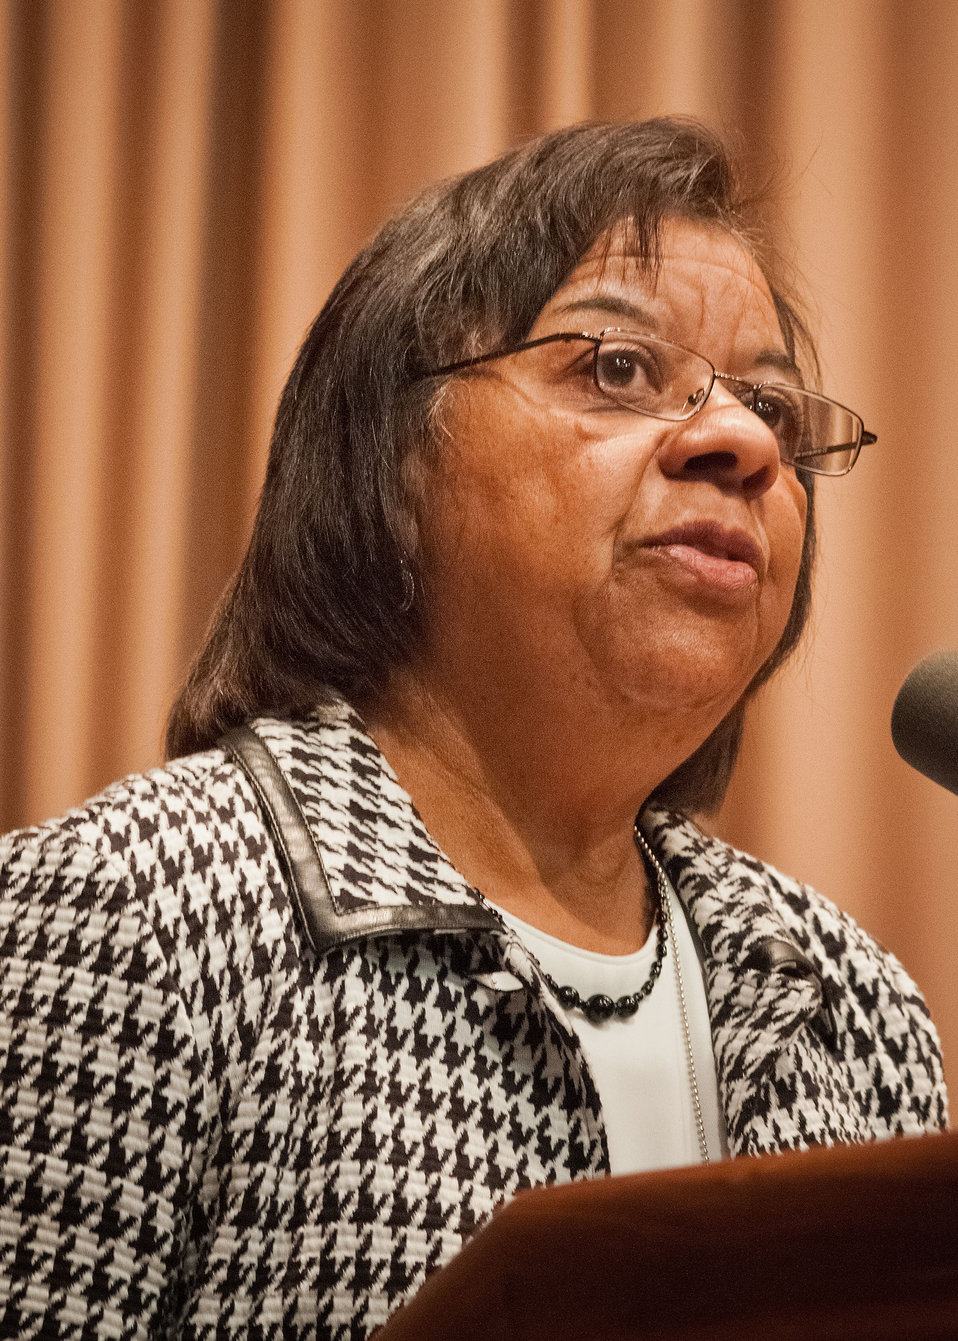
Council of Sate Administrators of Vocational Rehabilitation Deputy Director Rita Martin speaks at the U.S. Department of Agriculture (USDA) 2012 National Disability Employment Awareness Month celebration in the Jefferson Auditorium at USDA in Washington, D.C. on Wednesday, Oct. 17, 2012. The theme for the event was, “A Strong Workforce is an Inclusive Workforce: What Can You Do?